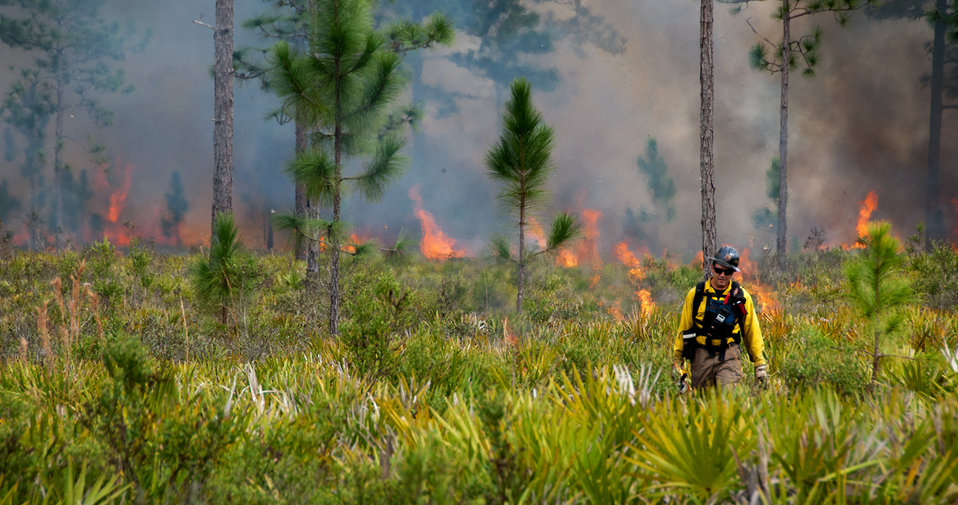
Lake Woodruff Volusia 5 Prescribed Fire Febuary 2014

USFWS firefighter Kris Kasper carries fire through the palmetto to the fireline. On February, 12 2014 USFWS firefighters conducted a 137 acre prescribed fire at Lake Woodruff NWR to reduce the wildfire risk and enhance the wildlife habitat on the southern end of the refuge.